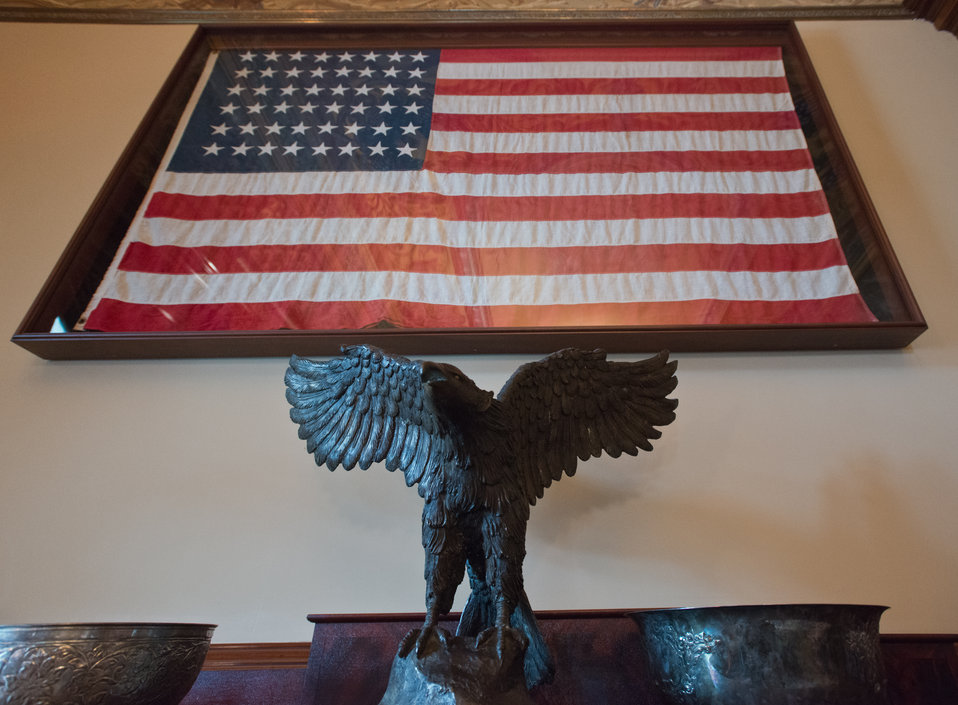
An Eagle statue, silver bowls and a framed U.S. flag are on display in the historic Secretary of War suite in the White House, Washington, D.C. on Wednesday, Apr. 24, 2013.